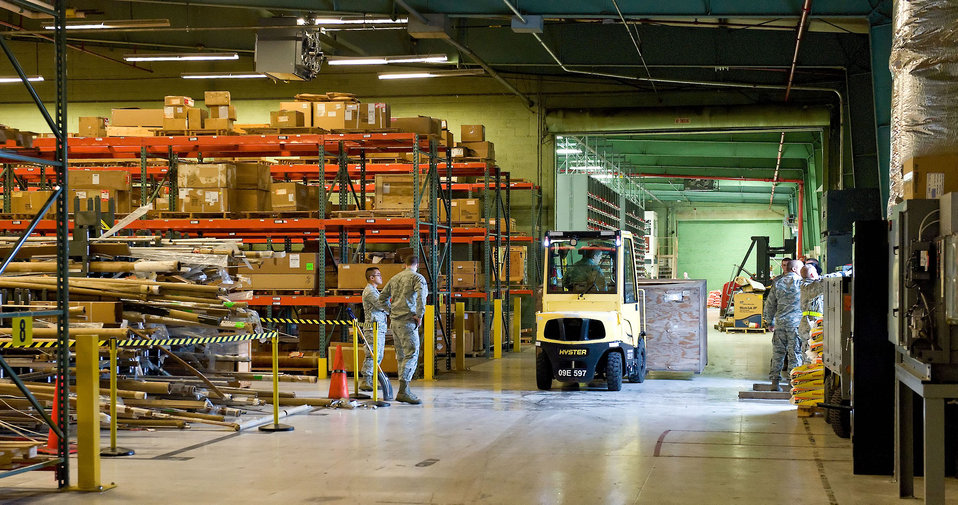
Dover Air Force Base prepares

Members of the 436th Logistics Readiness Squadron reposition supply assets in Oct. 21, 2012, at Dover Air Force Base, Del. Assets normally stored outside were brought in prior to Hurricane Sandy’s arrival.